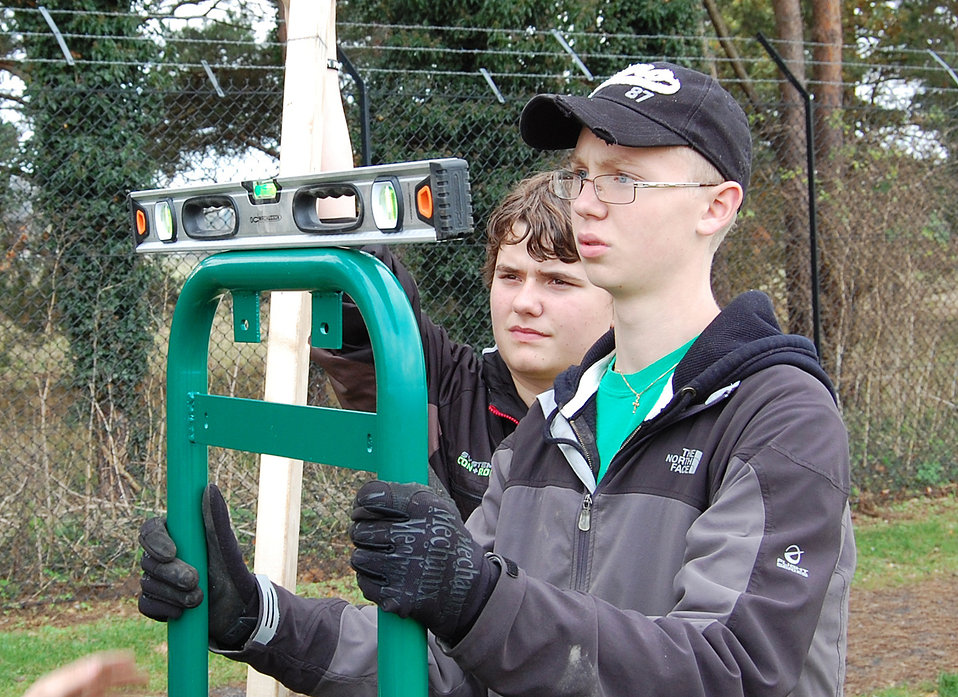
Eagle service project

Joshua Kent (right) and Hayden Howard eye a leveler to ensure the poles of one of the 15 new fitness stations along the running trail at Royal Air Force Lakenheath, England, are correctly aligned. Joshua, a Boy Scout with local Scout Troop 219, initiated this service project to help earn his Eagle Scout badge.